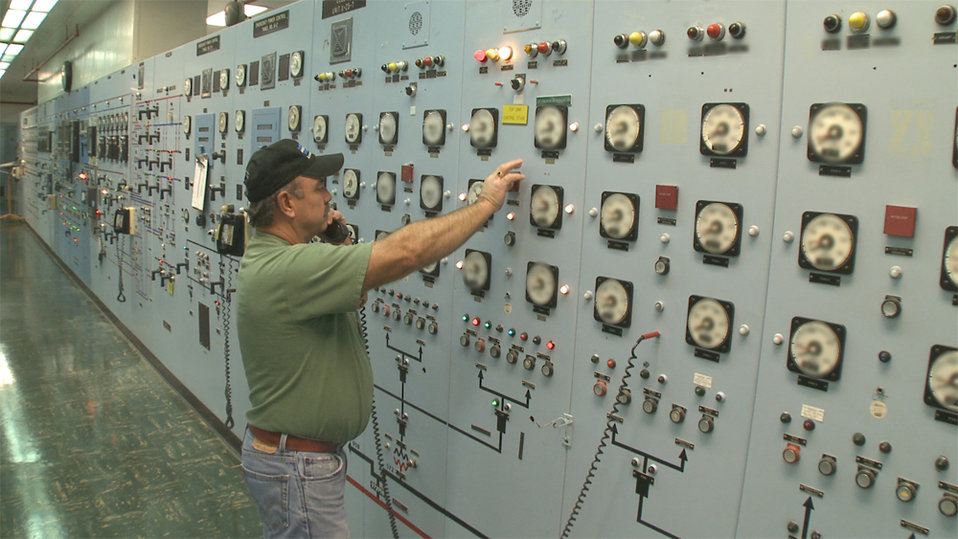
EM to Proceed with Demolition Following Completion of Cascade Cleanout Operations

The switch to the last operating cell at the uranium enrichment facility was manned by Operator Russ Nickell during the shutdown at midday May 30, 2012 in the X-326 Process Building at the Portsmouth site in Piketon.

EM and Ohio Environmental Protection Agency are reviewing decontamination and decommission (D&D) approaches for three buildings that housed the equipment for uranium enrichment that was shut down this spring after operating for 57 years.